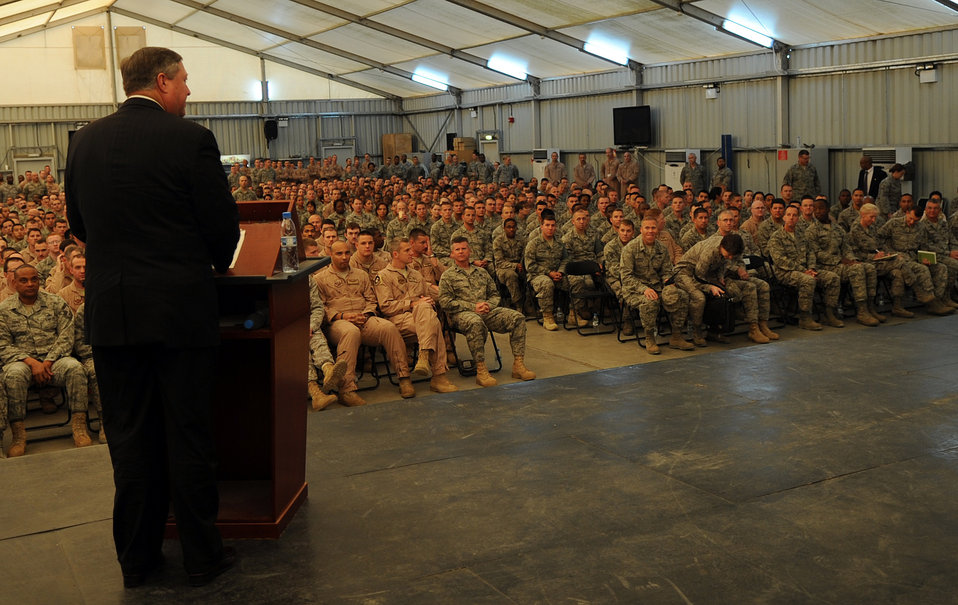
SecAF visits 380th AEW

SOUTHWEST ASIA - Secretary of the Air Force Michael Donley speaks to Airmen of the 380th Air Expeditionary Wing Dec. 23, 2011. During his two-day tour of the installation, Airmen, Soldiers and Sailors briefed the SecAF about current and future operations of the wing. In his speech, Donley focused on the importance of building partnerships with joint and coalition partners.